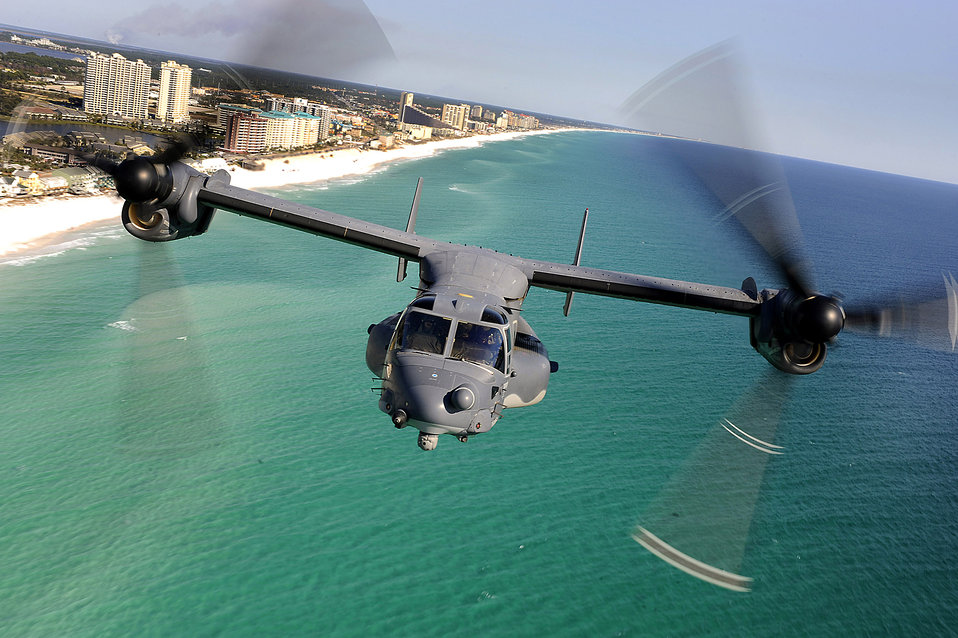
Taking the scenic route

A CV-22 Osprey aircraft from the 8th Special Operations Squadron at Hurlburt Field, Fla., flies Jan. 31, 2009, over Florida's Emerald Coast. While over the water, the crew practiced using a hoist, which is used to rescue stranded people.